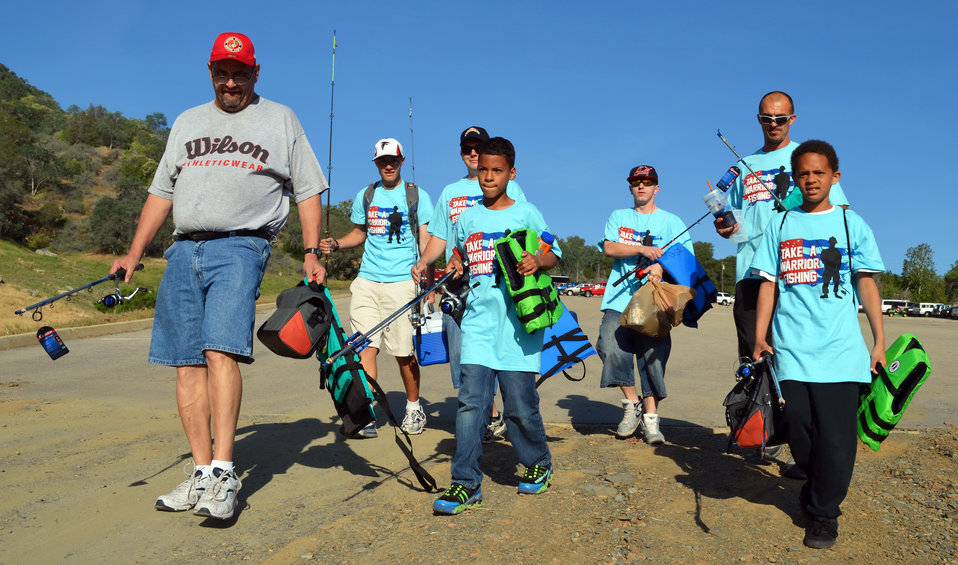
Take a Warrior Fishing 2014 at Pine Flat Lake

Pine Flat Lake, the U.S. Army Corps of Engineers Sacramento District park near Piedra, Calif., hosted Take a Warrior Fishing on May 3, 2014. The recreational event sponsored by Central Valley Veterans and their corporate donors, plus bright sunshine and good fishing, attracted 68 veterans and their families. A team of over 100 volunteers made sure veterans and their families enjoyed a day of fishing, fun and food.